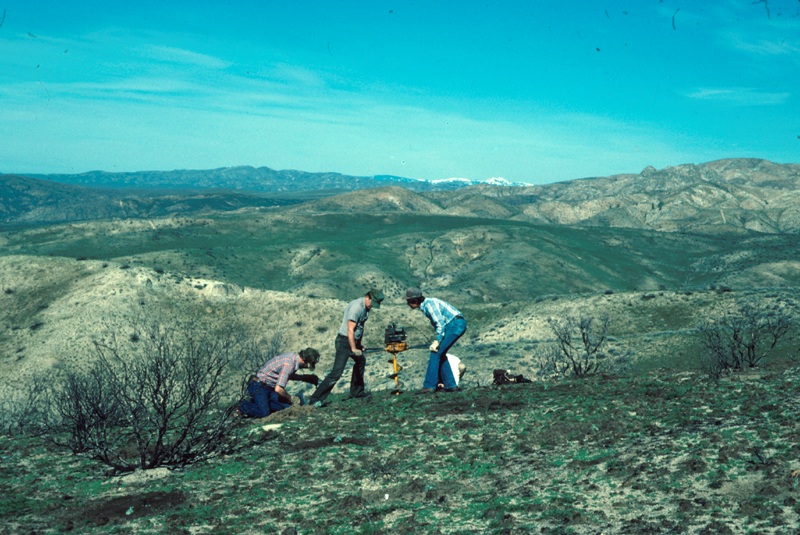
Shrub Restoration Range Restoration Project Lower Snake River District